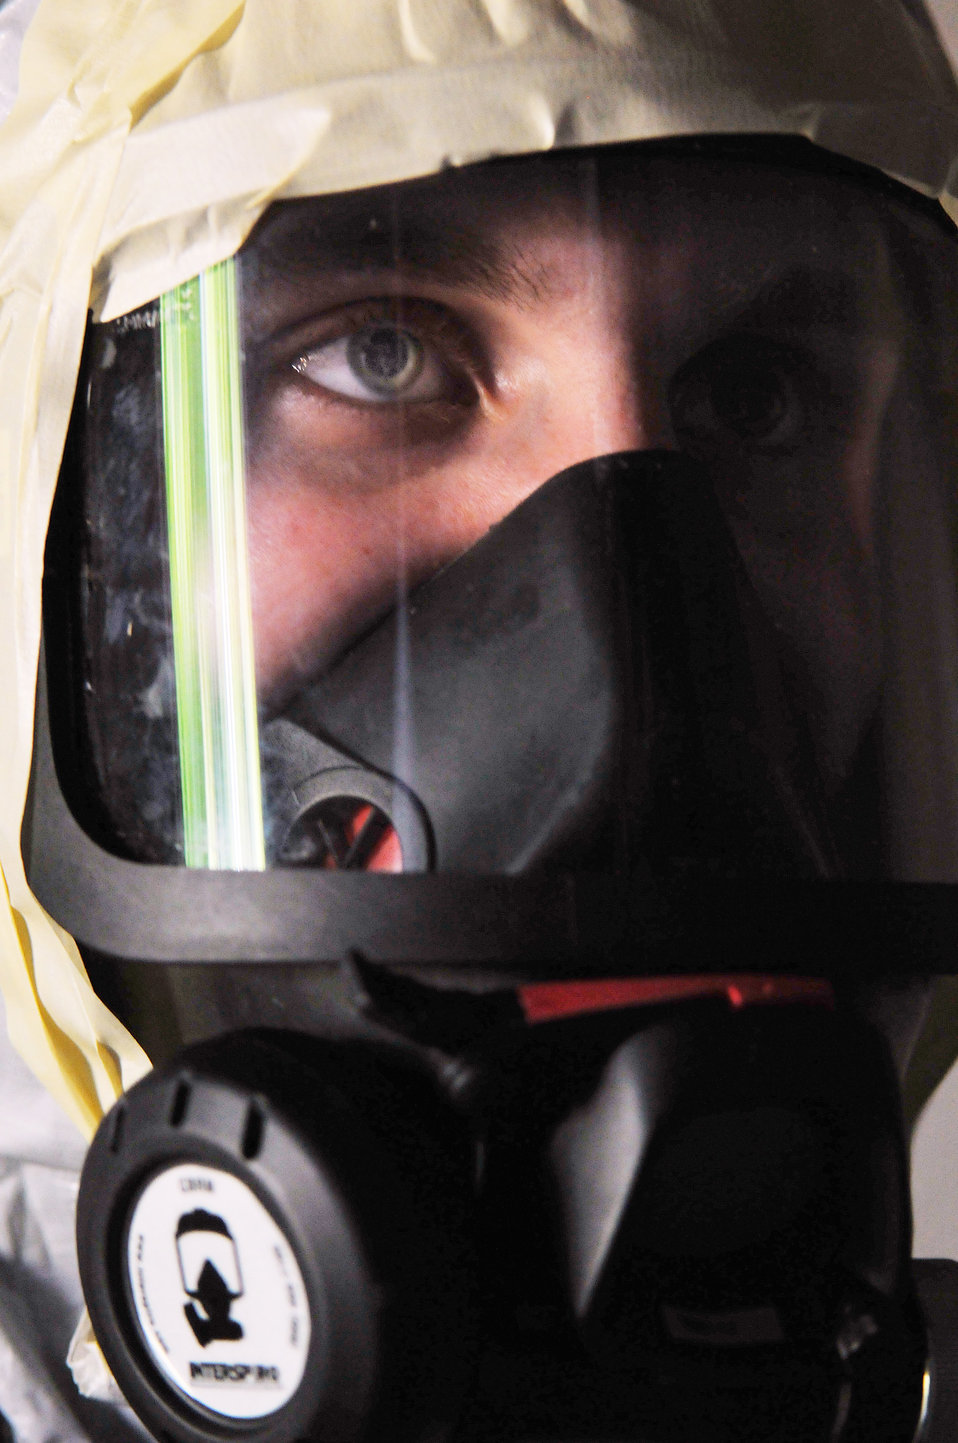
Airmen in Europe test threat responses

Staff Sgt. Christopher McFefries takes a break June 23 during the 2009 Chemical, Biological, Radiological, and Nuclear Challenge at Ramstein Air Base, Germany. The CBRN Challenge consisted of six base teams going head to head in six different scenarios, an equipment olympic challenge, and land navigation challenge. Sergeant McFefries is a 100th Civil Engineer Squadron emergency manager.